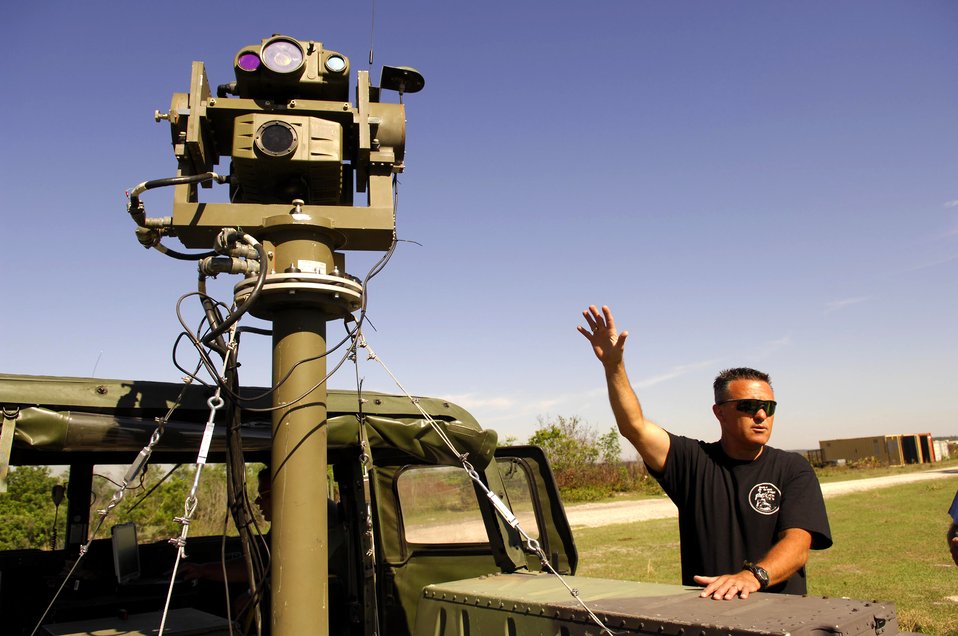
Battlefield technology key to Atlantic Strike V

Bob Raulerson, a marketing manager from Northrop Grumman, demonstrates the capabilities of